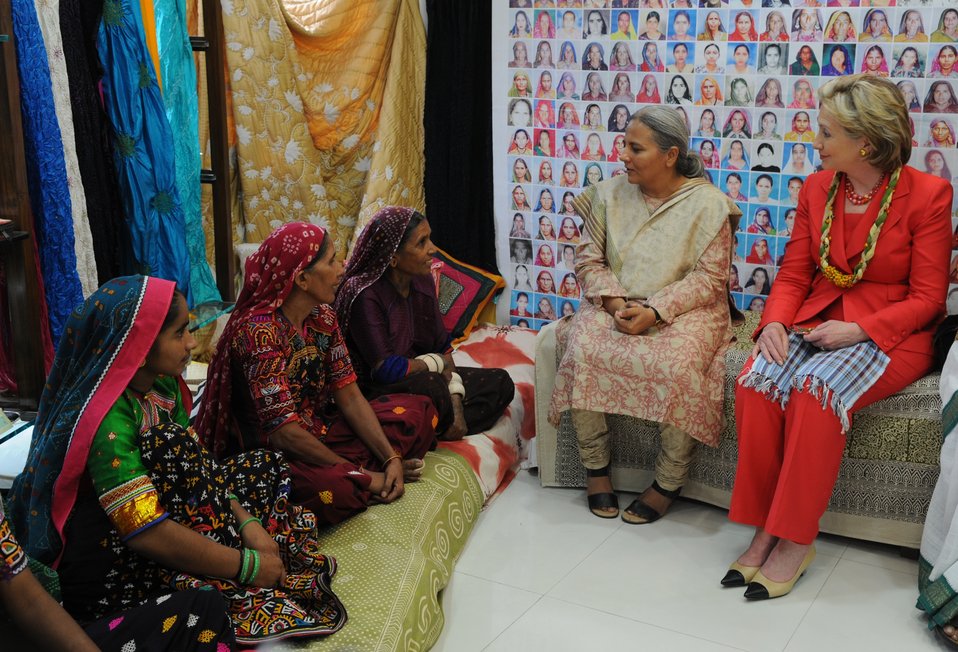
Secretary Clinton Visits SEWA's Hansiba Store

U.S. Secretary of State Hillary Rodham Clinton and SEWA Executive Director Reema Nanavaty listen as women artisans share stories of their involvement with SEWA programs that have helped them achieve economic self-sufficiency and leadership roles in the organization, at the Hansiba Store in Mumbai, India July 18, 2009.